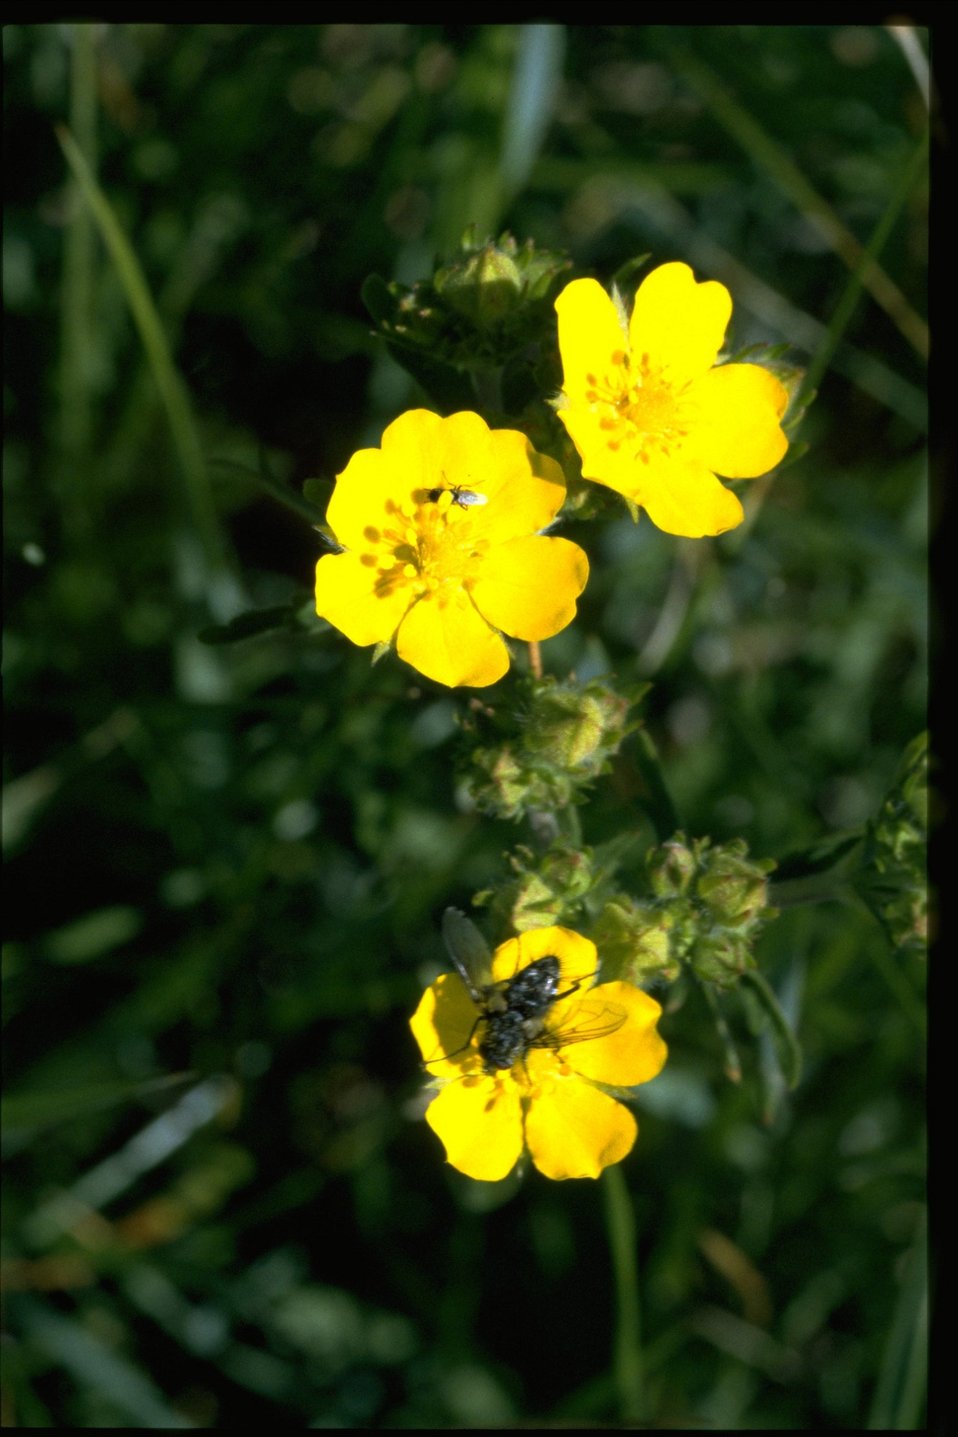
Medium shot of Phlox wildflowers.